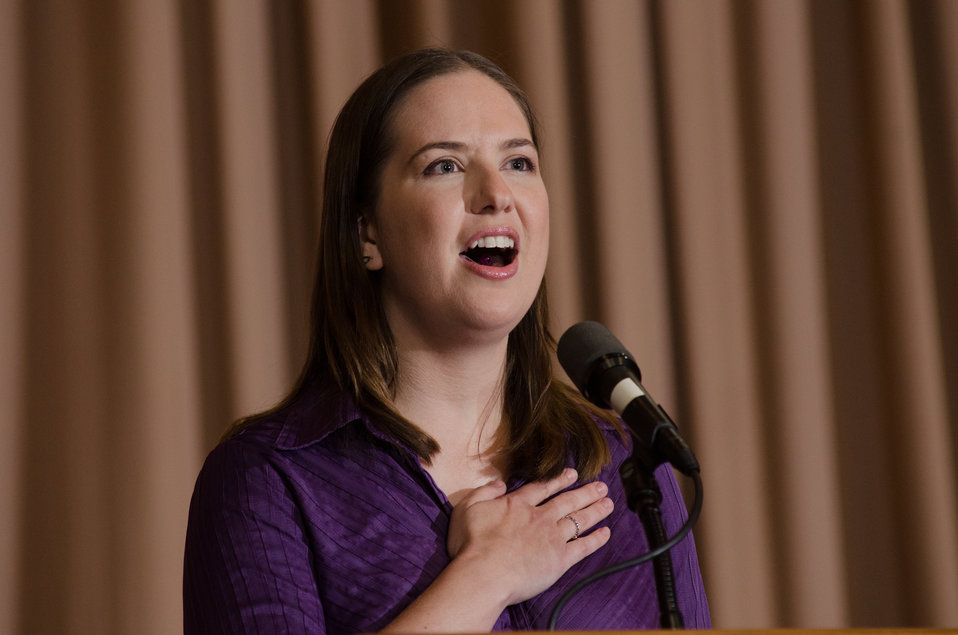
U.S. Department of Agriculture (USDA) Office of Human Resources Management, Program Specialist Bonnie Hayes sings the National Anthem, during the 2013 National Hispanic Heritage Month ”Hispanics: Serving and Leading our Nation with Pride and Honor,” on Thursday, Sept. 19, 2013, in the Jefferson Auditorium, USDA Headquarters, Washington, D.C.